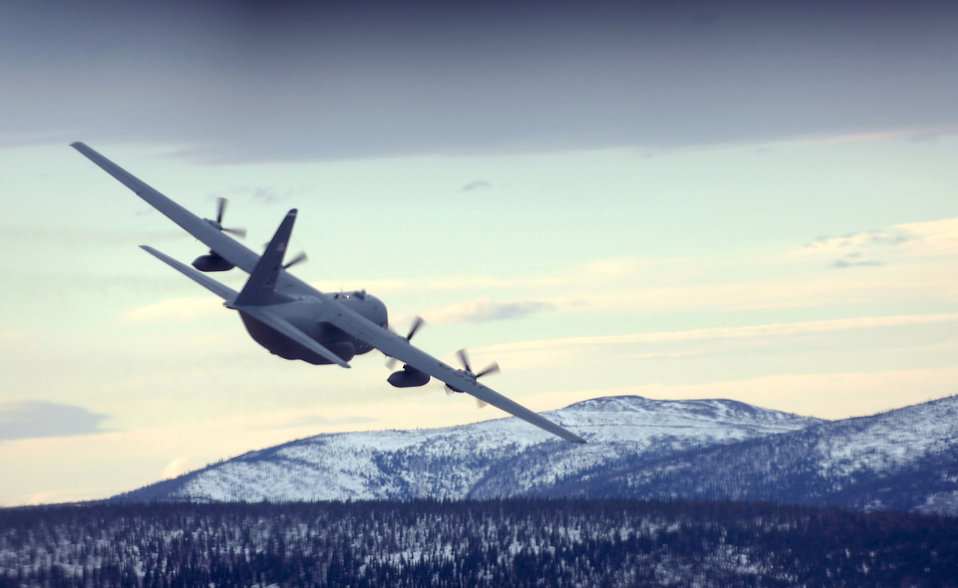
Northern exposure

A C-130 Hercules flys a training mission that dropped pallets of simulated supplies at designated points in Alaskan Feb. 1. The C-130 belongs to the 517th Airlift Squadron at Elmendorf Air Force Base, Alaska. The 517th Airlift Squadron will replace its fleet of C-130s with the C-17 Globemaster III in 2007.